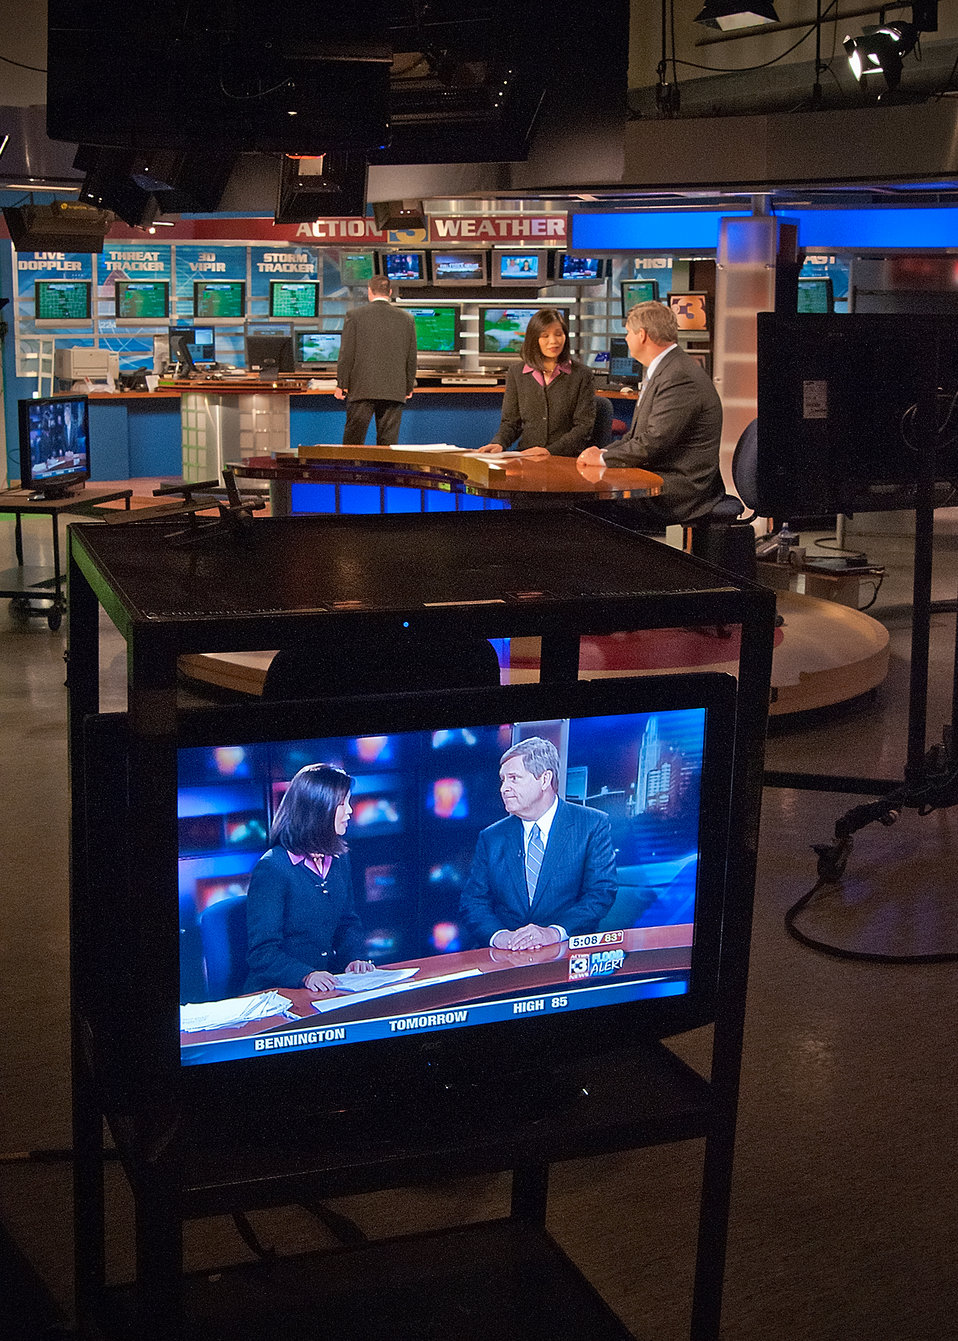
Michelle Wang (left) a news anchor with the CBS affiliate KMTV Channel 3 in Omaha, Nebraska interviews Agriculture Secretary Tom Vilsack (right) during a live broadcast after Secretary Vilsack held a town hall meeting at the Glenwood Community High School in Glenwood, Iowa on Thursday, June 16, 2011. Farmers, local and regional media listened and questioned Secretary Vilsack on the cause of the floodwaters along the Missouri River affecting Iowa and Nebraska. Secretary Vilsack offered advice and assistance available through the United States Department of Agriculture and other federal agencies.